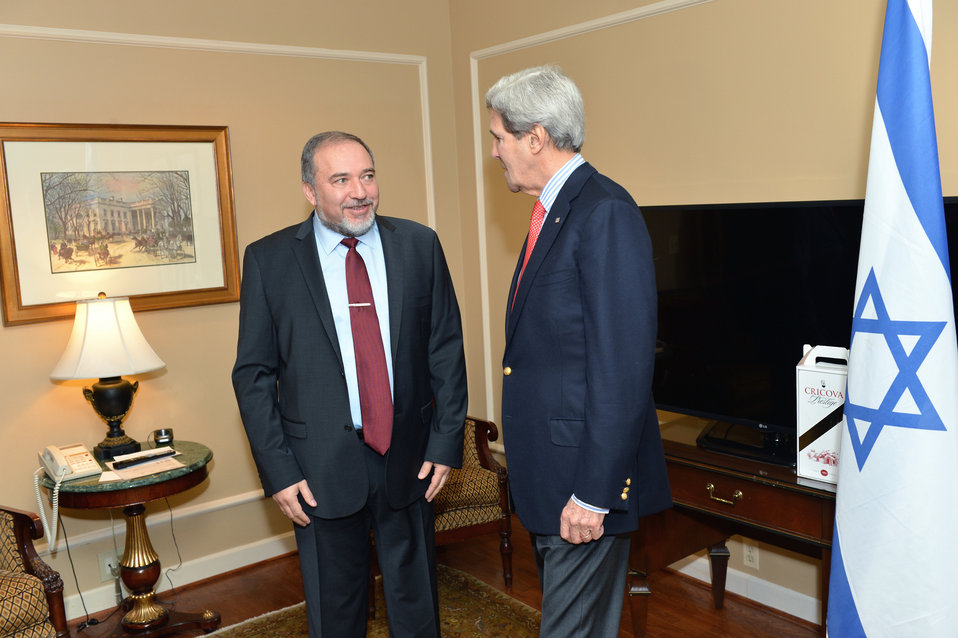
Secretary Kerry Meets With Israeli Foreign Minister Lieberman

U.S. Secretary of State John Kerry meets Israeli Foreign Minister Avigdor Lieberman in Washington, D.C., on December 8, 2013.